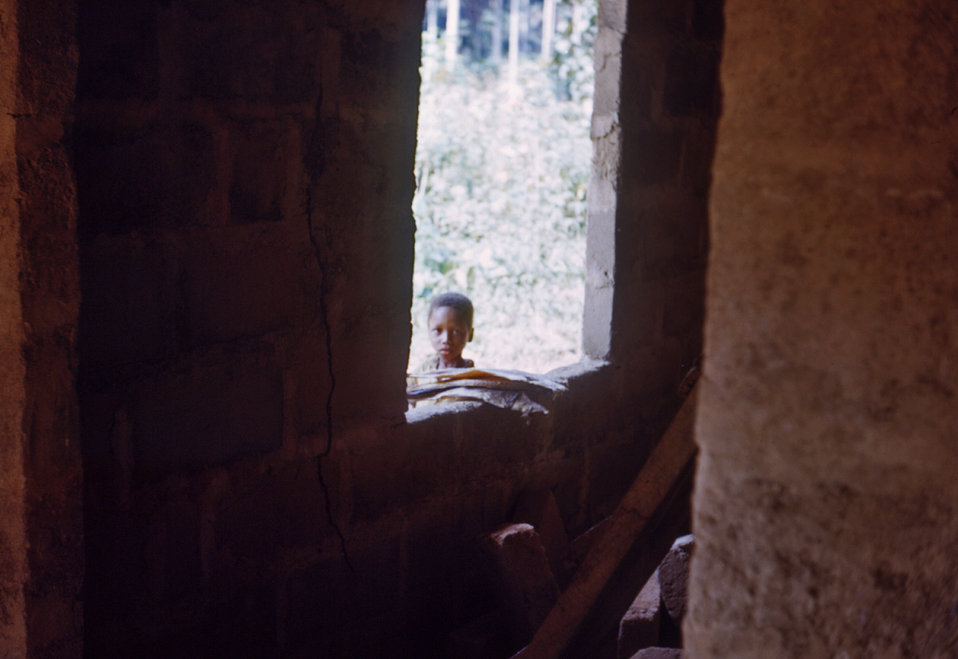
This 1968 photograph showed a child standing outside a refugee camp house during the Nigerian-Biafran civil war.